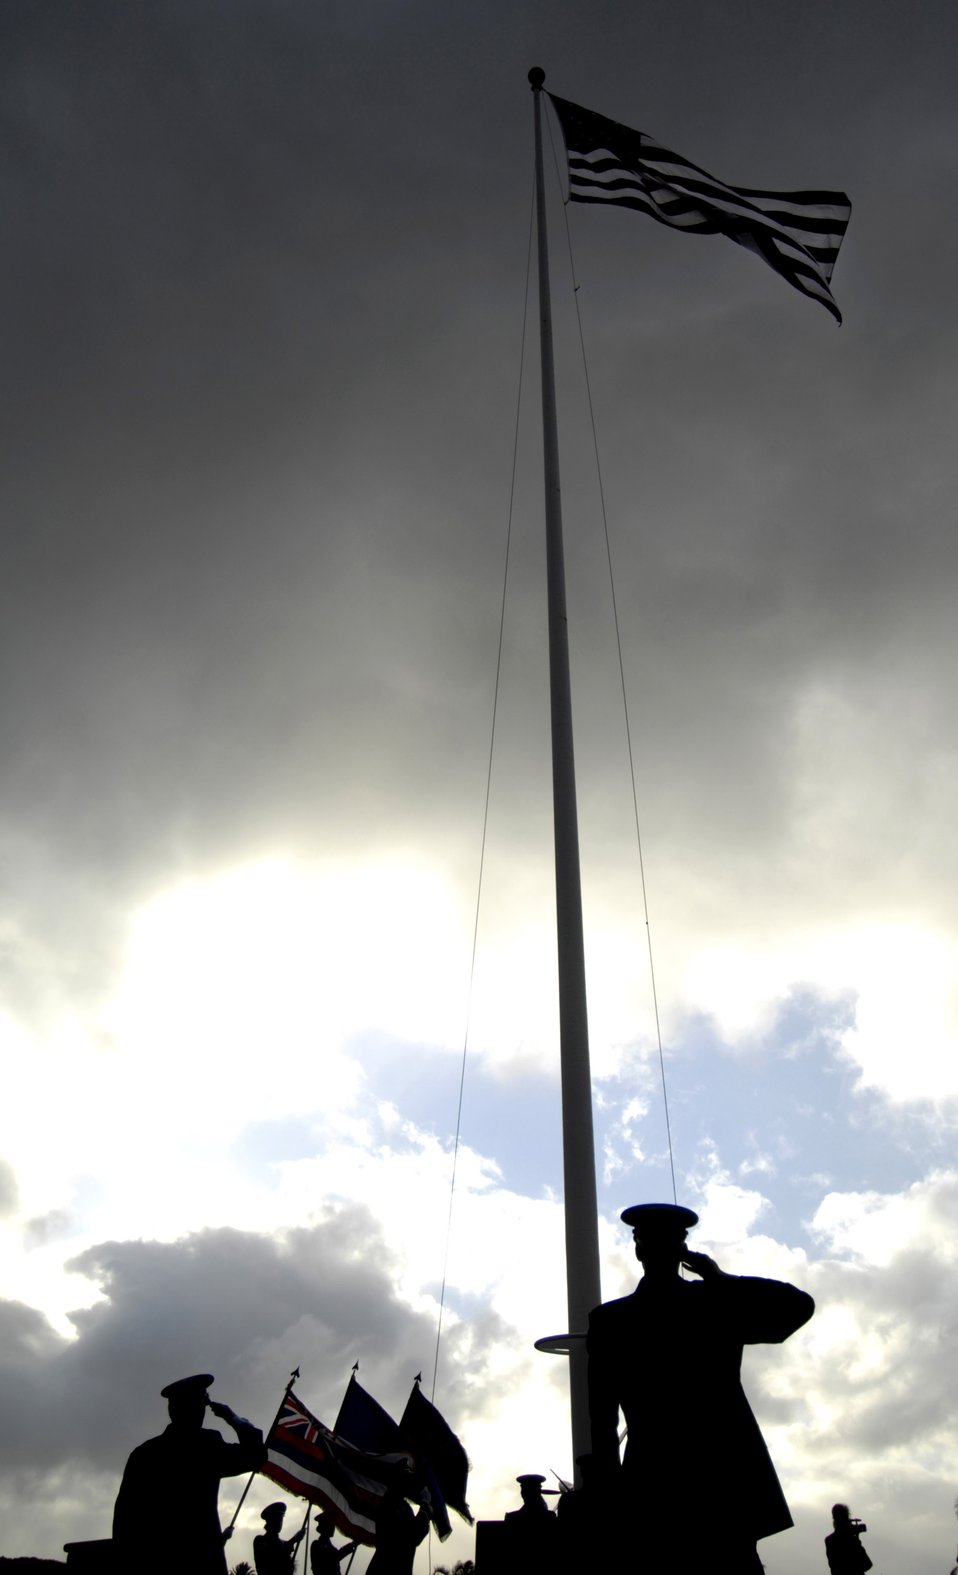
Remembering the Pearl Harbor attack

A ceremony at the Hickam Air Force Base, Hawaii, flagpole was held Dec. 7 to honor the 189 who died and 303 who were wounded during a surprise attack by Japanese fighter aircraft 65 years ago.